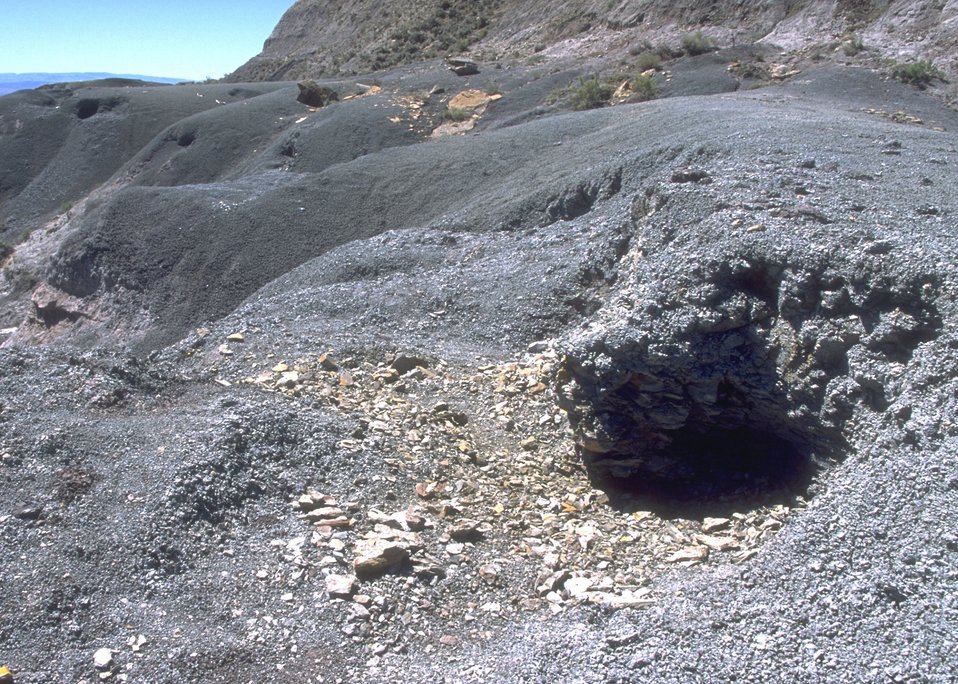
View of digging area, Cedar Ridge Paleo area, Worland Field Office